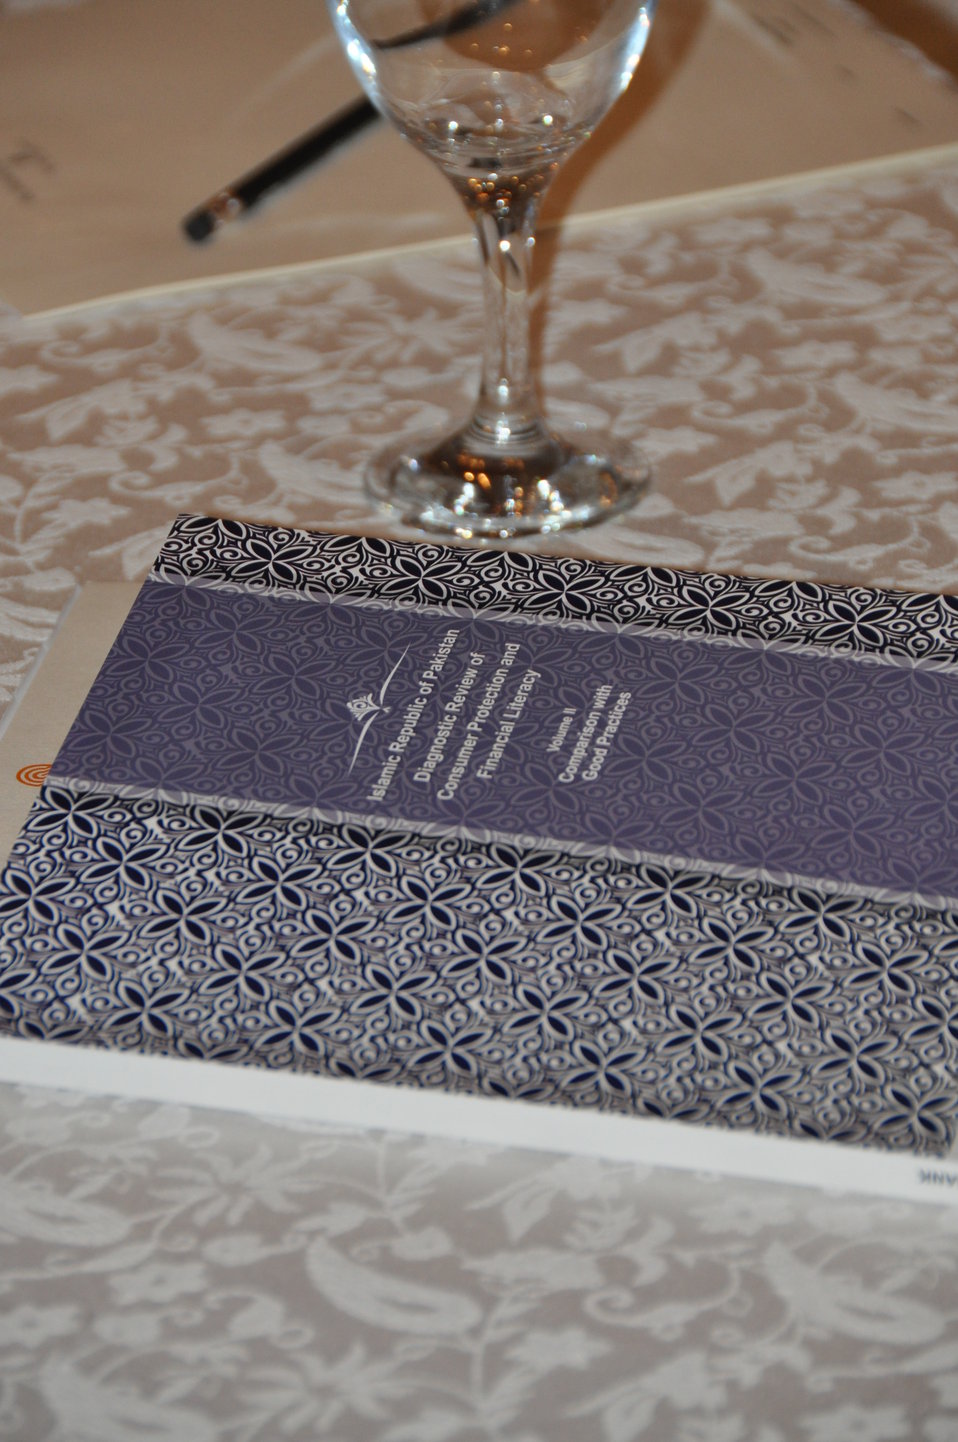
Consumer Protection and Financial Literacy workshop 05

USAID supported study to build public confidence in financial institutions; encourage savings and long-term investments